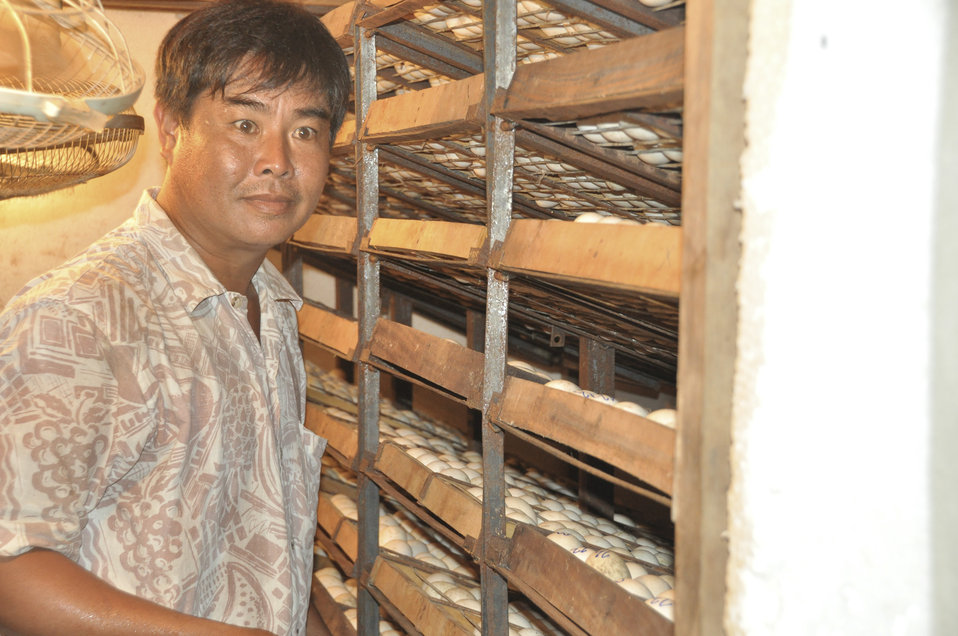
Mr. Thuong at his duck egg hatchery in Can Tho

USAID Vietnam